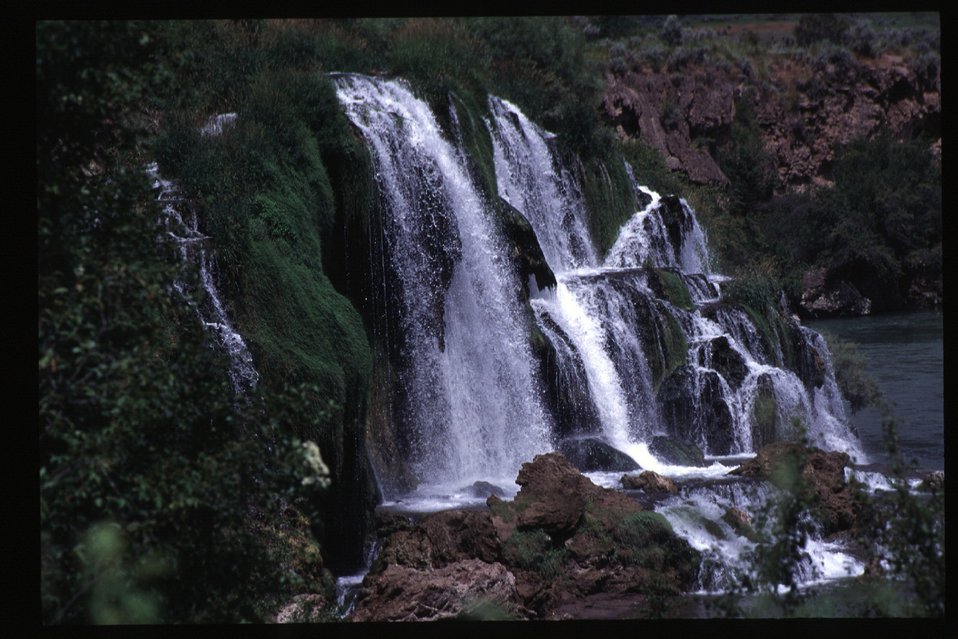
Scenic waterfall Fall Creek Falls Snake River Canyon USRD Upper Snake River District